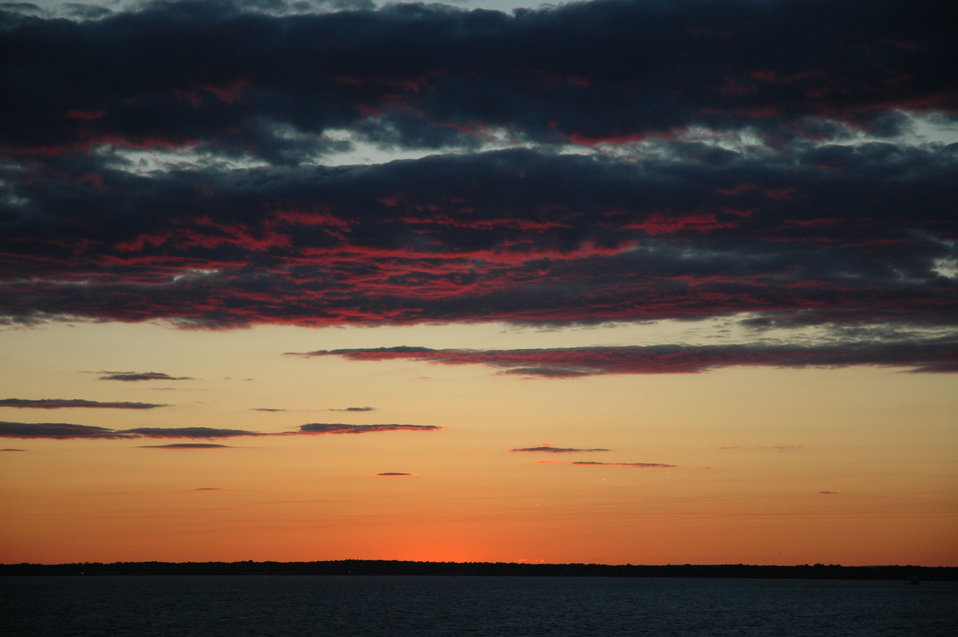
Sunset over Long Island Sound